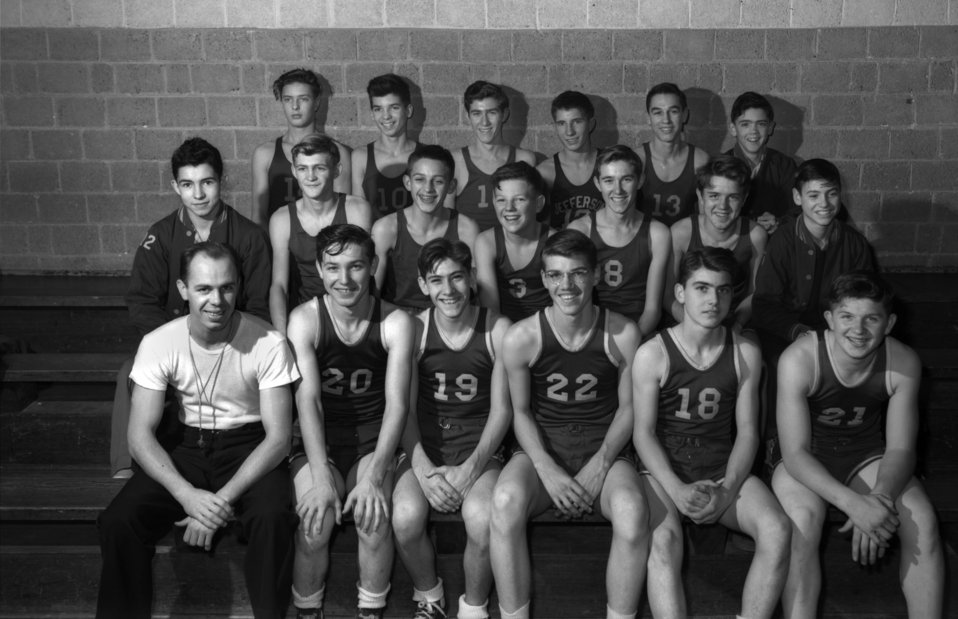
Jefferson Jr. High Basketball Team

04235-3 DOE photo by Lillian Stokes Oak Ridge Tennessee 1-9-1948